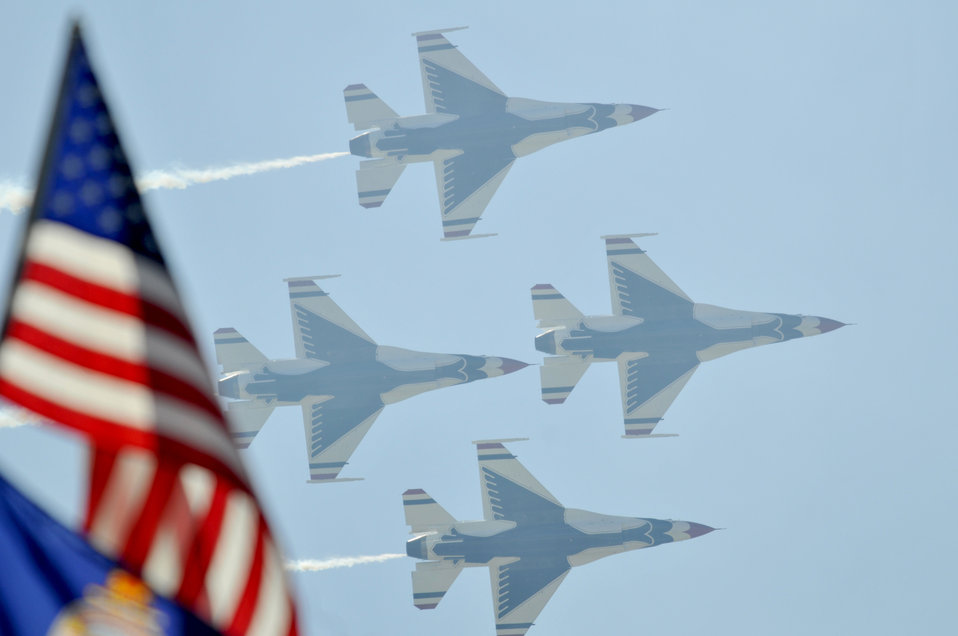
AirFest 2010

The U.S. Air Force air demonstration team, the Thunderbirds, perform precision aerial maneuvers Nov. 6, 2010, during AirFest 2010 at Lackland Air Force Base, Texas.